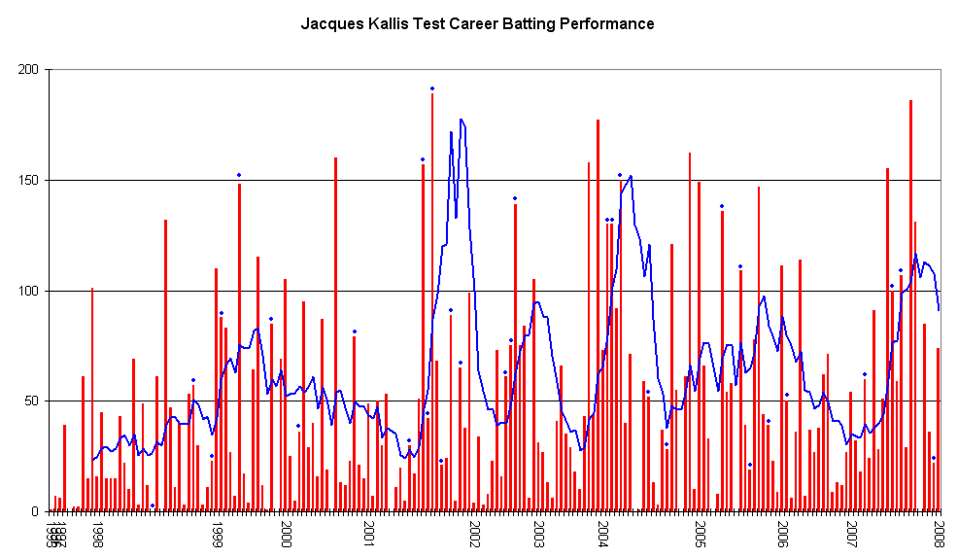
This graph details the Test Match performance of Jacques Kallis. The red bars indicate the player's test match innings, while the blue line shows the average of the ten most recent innings at that point. Note that this average cannot be calculated for the first nine innings. The blue dots indicate innings in which Kallis finished not-out. This graph was generated with Microsoft Excel 2002, using data from Cricinfo [1] and Howstat [2]. The information in this chart is current as of 28 January 2008.